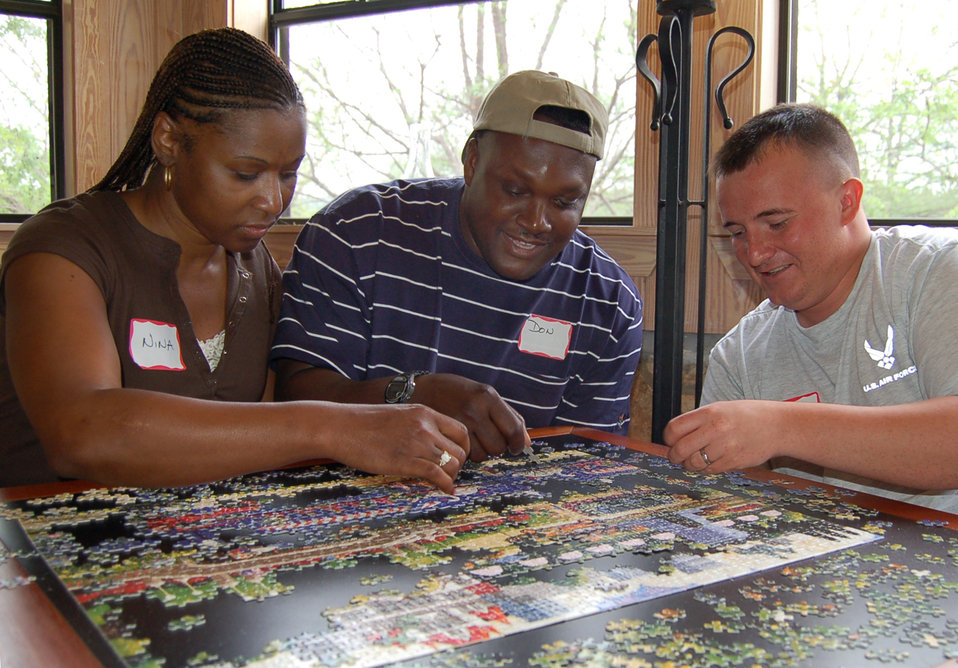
Retreat reconnects couples

Nina and Master Sgt. Don Taylor build a 1,000-piece puzzle with Senior Airman Aaron Childs during a retreat at the Heart of the Hills Camp in Hunt, Texas, on Saturday, April 22, 2006. The retreat was hosted by the Military, Veteran and Family Assistance Foundation, helps couples reconnect after the military spouse returns from a deployment.